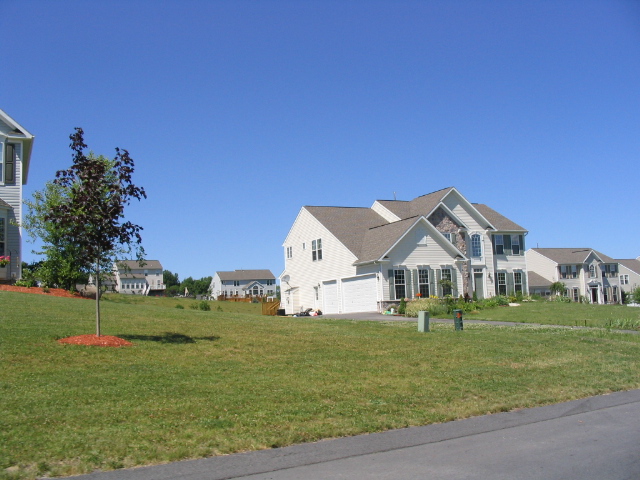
photo of a typical housing development in Camillus, NY, taken by me on June 30, 2007
Category:Images of New York